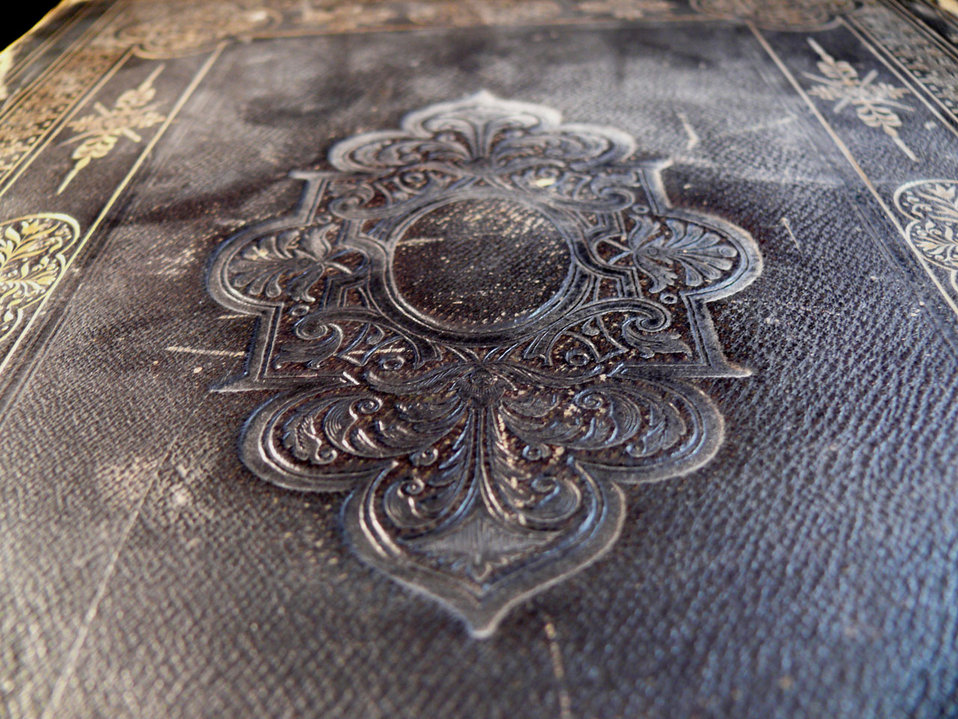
Old book on black background.